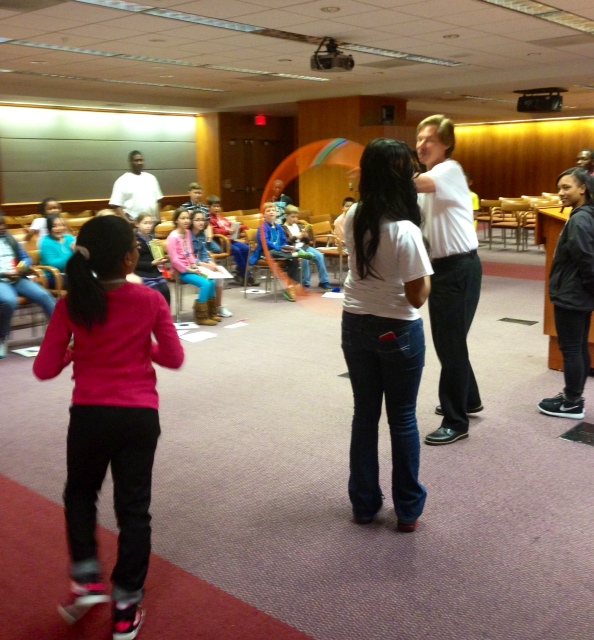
4.24.2014 Take Your Child to Work Day

Career Day Kids playing games in the FCC Commission Meeting Room.